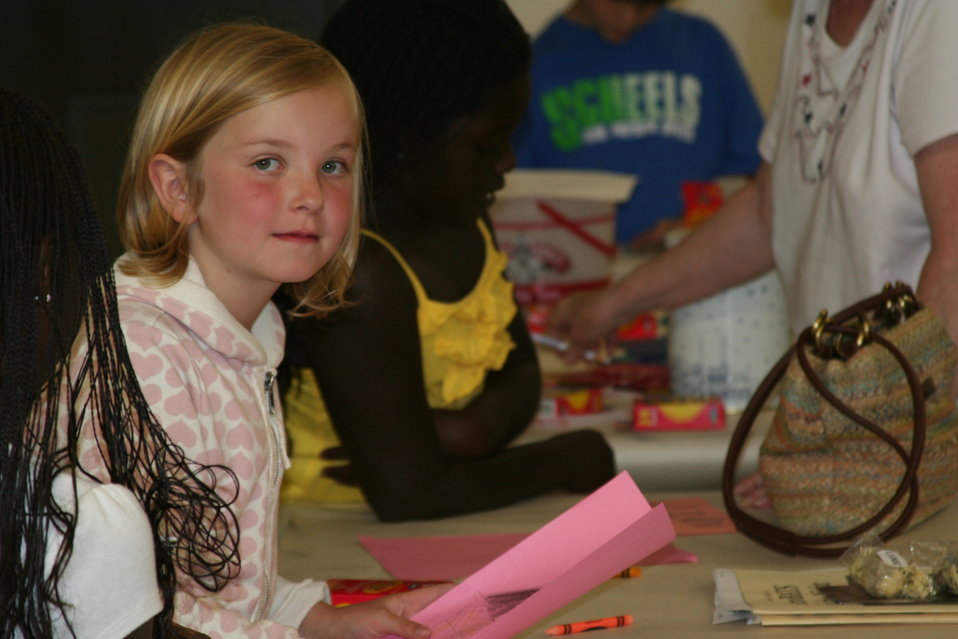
Creatures of the Night 2011